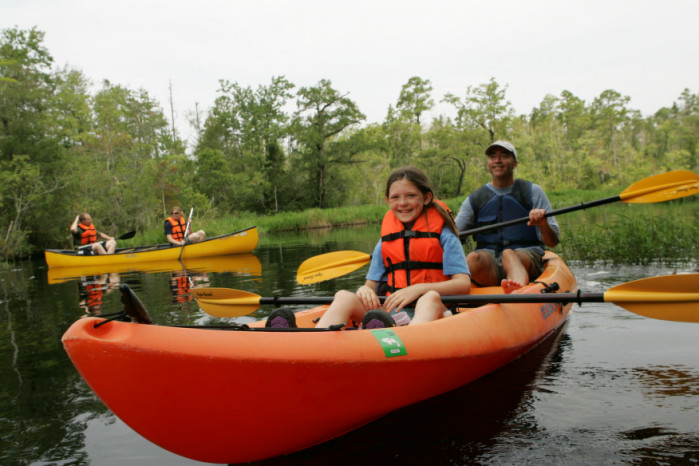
miles of smiles in a kayak

Alligator River